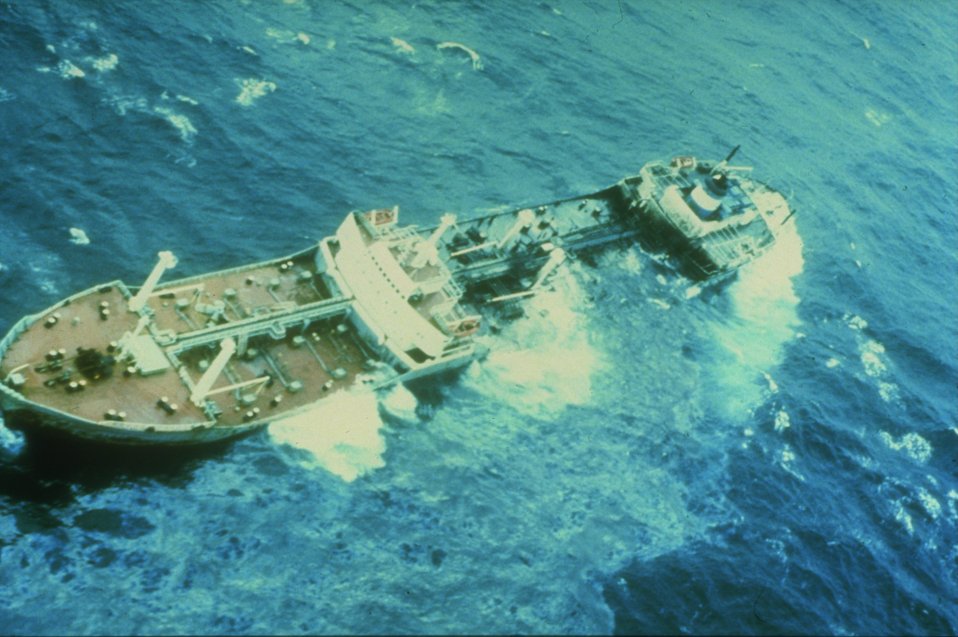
Argo Merchant oil spill. The ship broke apart and spilled its entire cargo of 7.7 million gallons of No. 6 fuel oil.